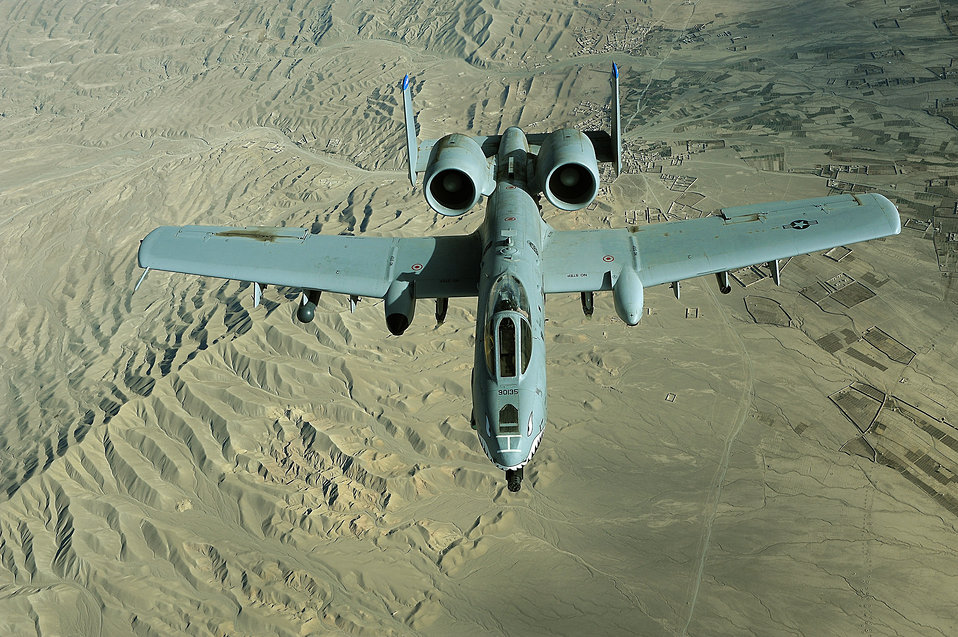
March 2 airpower summary: A-10s deter, disrupt enemy activities

An A-10 Thunderbolt II in-flight over Afghanistan in support of Operations Enduring Freedom. A-10s perform shows of force to deter and disrupt enemy activities against ground forces.